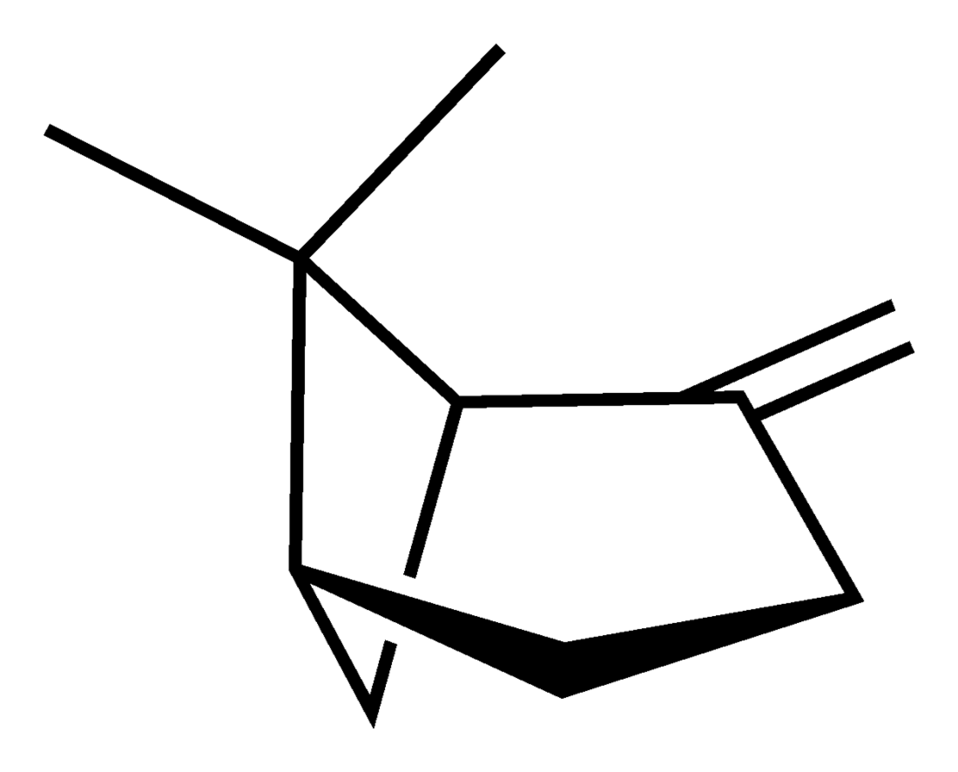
Skeletal formula of (−)-β-pinene